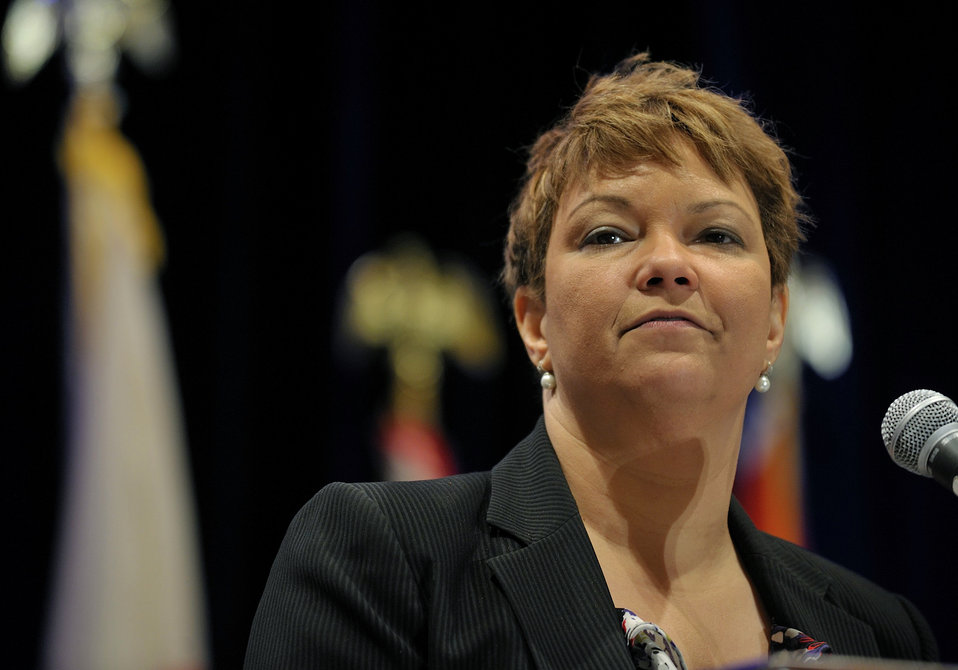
Tribal Energy Summit

EPA Administrator Lisa Jackson delivers morning Keynote Address at DOE Tribal Summit on May 5th 2011.